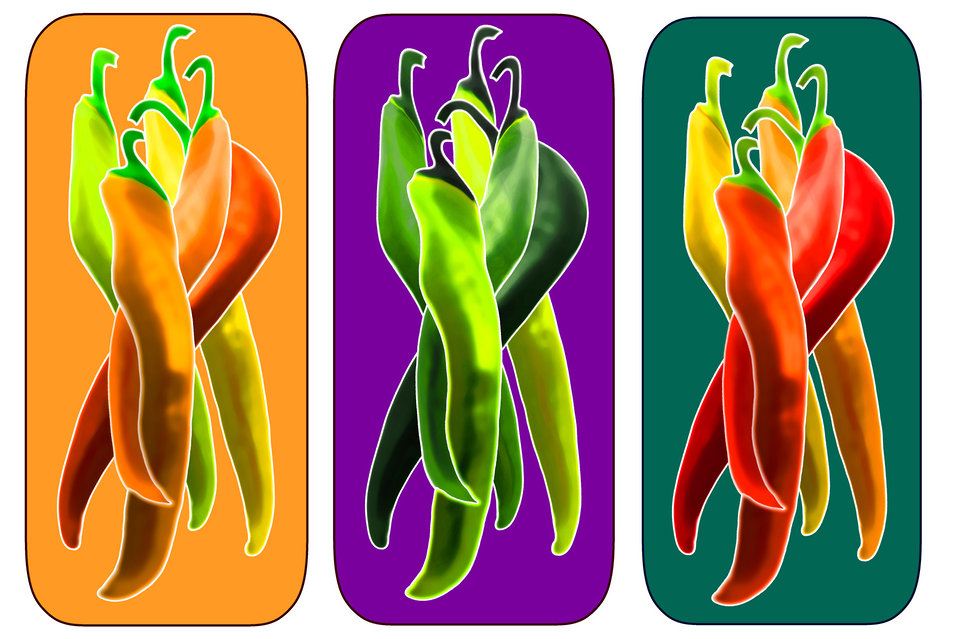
Chilies abc

Illustration of chilies.